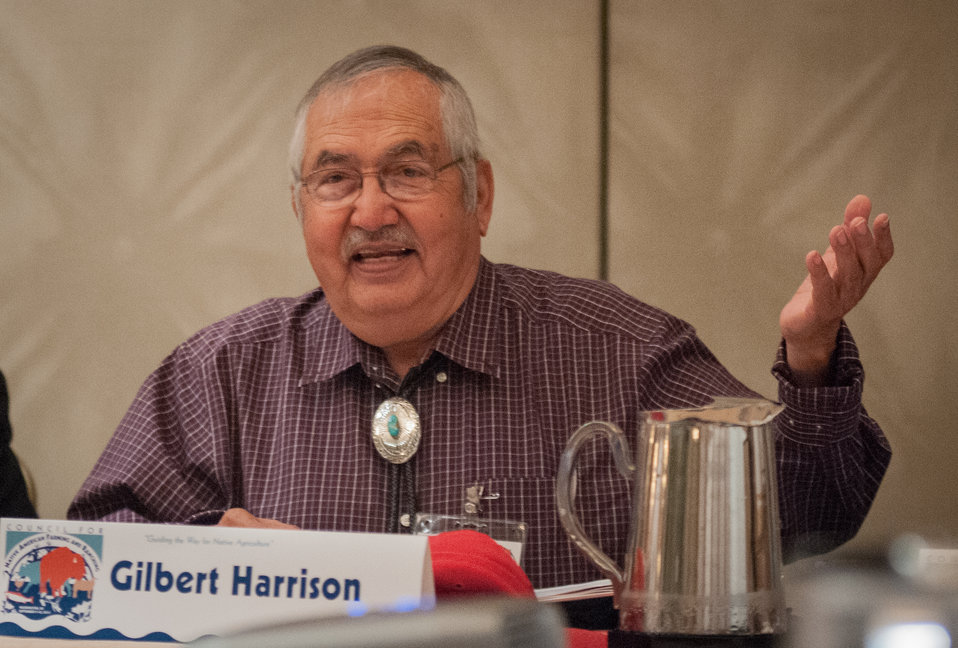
Gilbert Harrison a rancher from the Navaho Nation in Shiprock, NM, presents some ranching concerns, to Agriculture Secretary Tom Vilsack, during the U.S. Department of Agriculture's (USDA) Council for Native American Farming and Ranching (CNAFR) meeting, on Monday, Sep. 9, 2013 at the L'Enfant Plaza Hotel, in Washington, D.C. CNAFR was created to advise the Secretary on ways to eliminate barriers to participation for Native American Farmers and Ranchers in USDA programs. The Council was established as part of the Keepseagle settlement, and is conducted under the oversight of USDA's Office of Tribal Relations, which is part of the Office of the Secretary of Agriculture. Also in attendance is The Director of Tribal Relations Leslie Wheelock, Agriculture Assistant Secretary for Civil Rights Joe Leonard, Jr. Ph.D., Farm Services Administration Administrator Juan M. Garcia and Deputy Administrator for Farm Loans Programs Chris Beyerhelm.